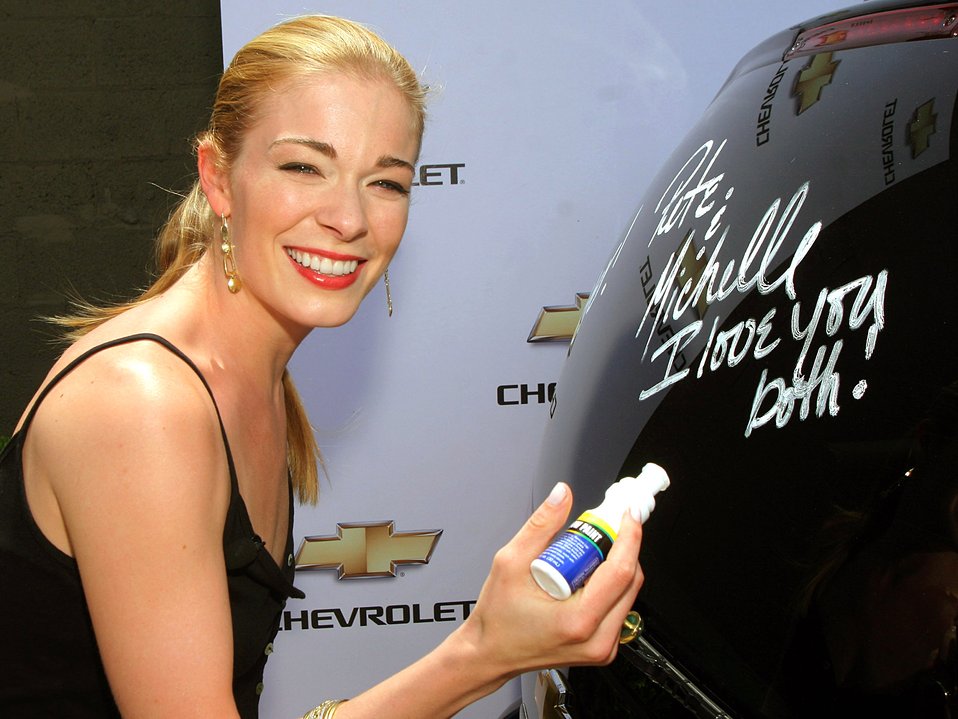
LeeAnn Rimes headlines Air Force holiday radio special

Multi-Grammy-winning artist LeAnn Rimes signs the back window of a Chevrolet Uplander after presenting the keys to Navy Petty Officer 1st Class Peter Reid and his wife, Michele, in Nashville, Tenn. Petty Officer Reid was severely injured while serving in Operation Iraqi Freedom. Ms. Rimes is the featured performer for the